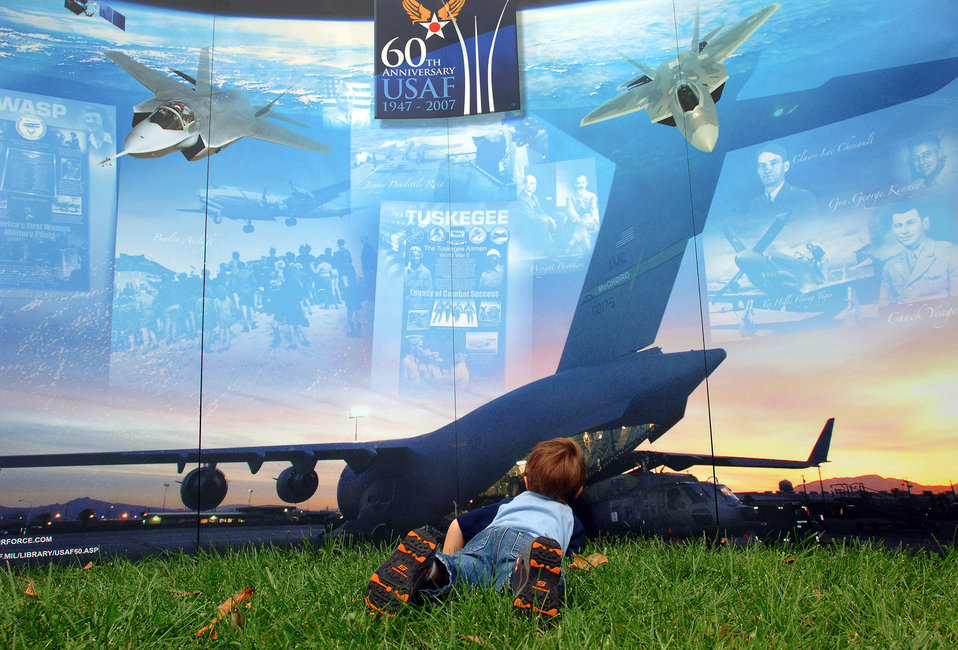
Astronaut orbits Air Force Week science day

Four-year-old Kiaden from Concord, N.H., takes a closer look inside a 60th Anniversary Air Force display during Air Force New England Science Day Aug. 21 in Concord, N.H.